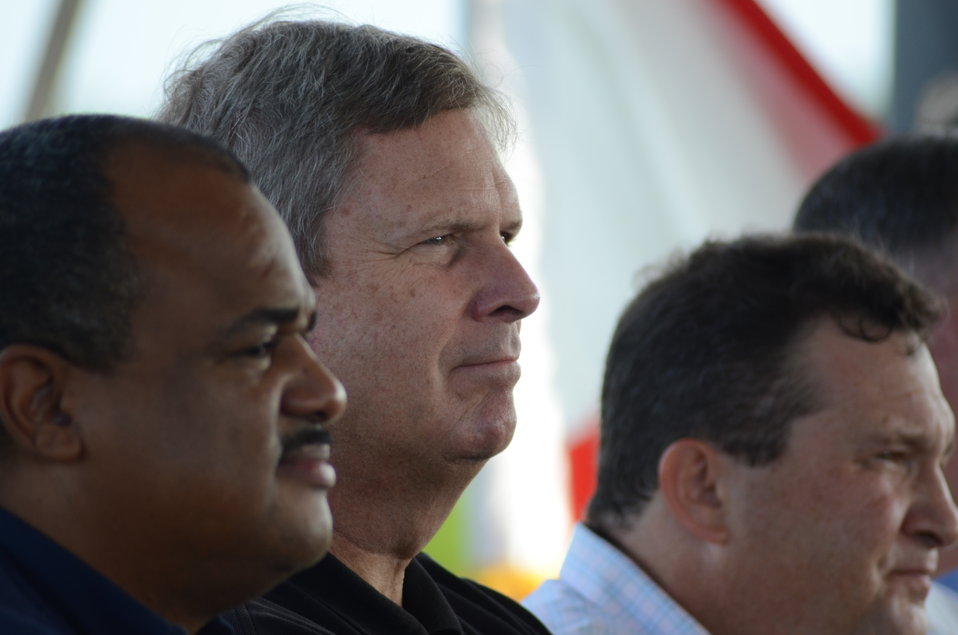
Agriculture Tom Vilsack (center) participating in a signing ceremony in WEST PALM BEACH, Florida, August 11, 2011, with A.J. Suarez of Hendry County Nursery Farms-a landowner who will benefit from the $100 million in financial assistance to acquire permanent easements and assist with wetland restoration on nearly 24,000 acres of agricultural land in the Northern Everglades Watershed. Suarez signed an agreement with USDA to start the process to acquire the easement rights to 3,782 acres.